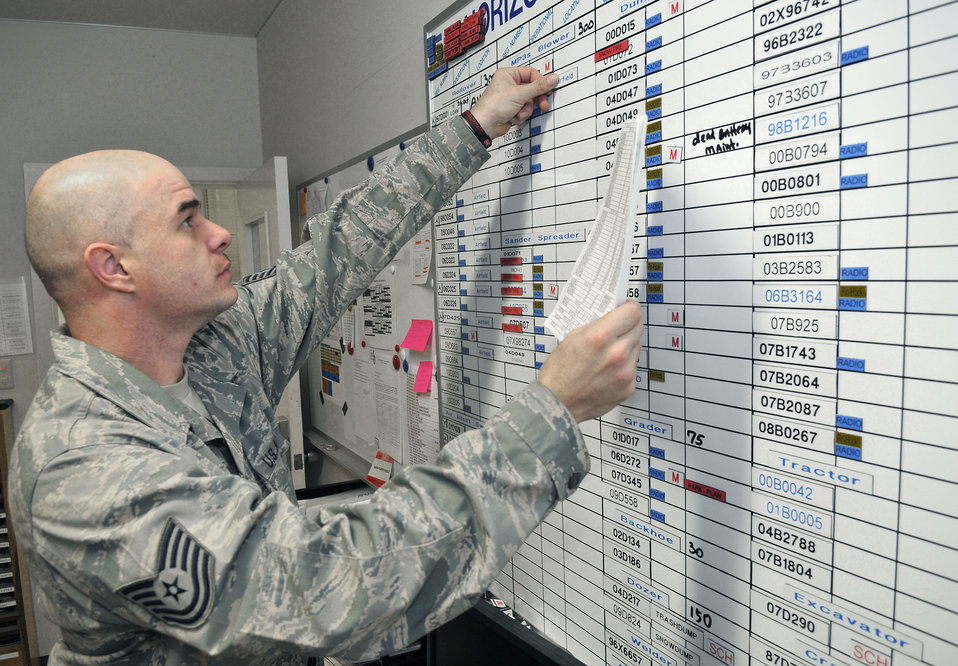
CE Clears the Way

Tech. Sgt. Christopher Messmer updates the vehicle status board to assist other maintenance technicians Dec. 16, 2010, at Misawa Air Base, Japan. The vehicle status board shows maintenance requirements and vehicle locations. Sergeant Messmer is a 35th Civil Engineer Squadron pavements and equipment construction technician